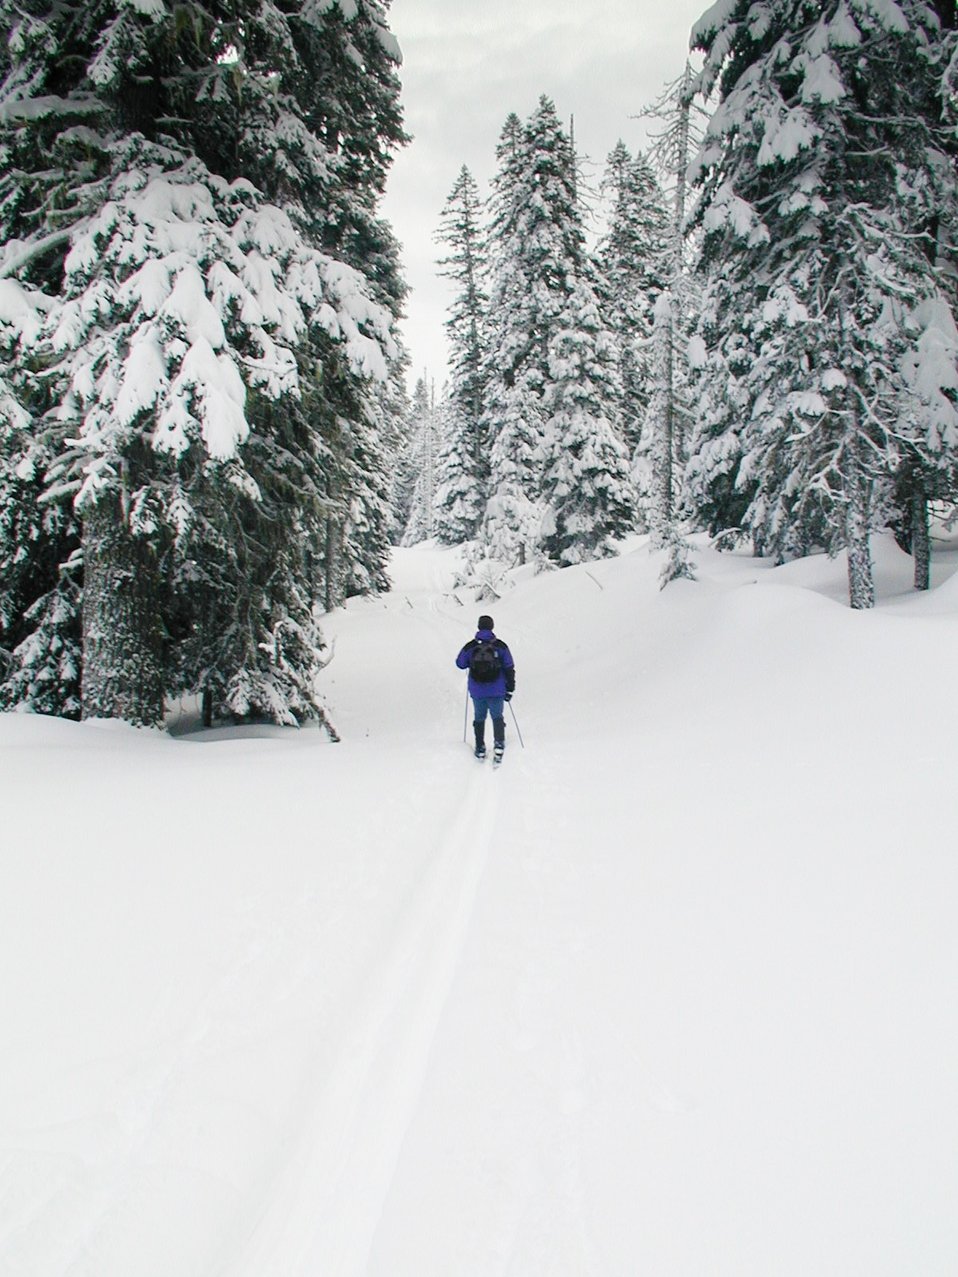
Buck Prairie Cross Country Ski Trail system consists of approximately 17 miles of interconnected trails on public and private lands on the ridges just west of Howard Prairie and Hyatt Reservoirs.